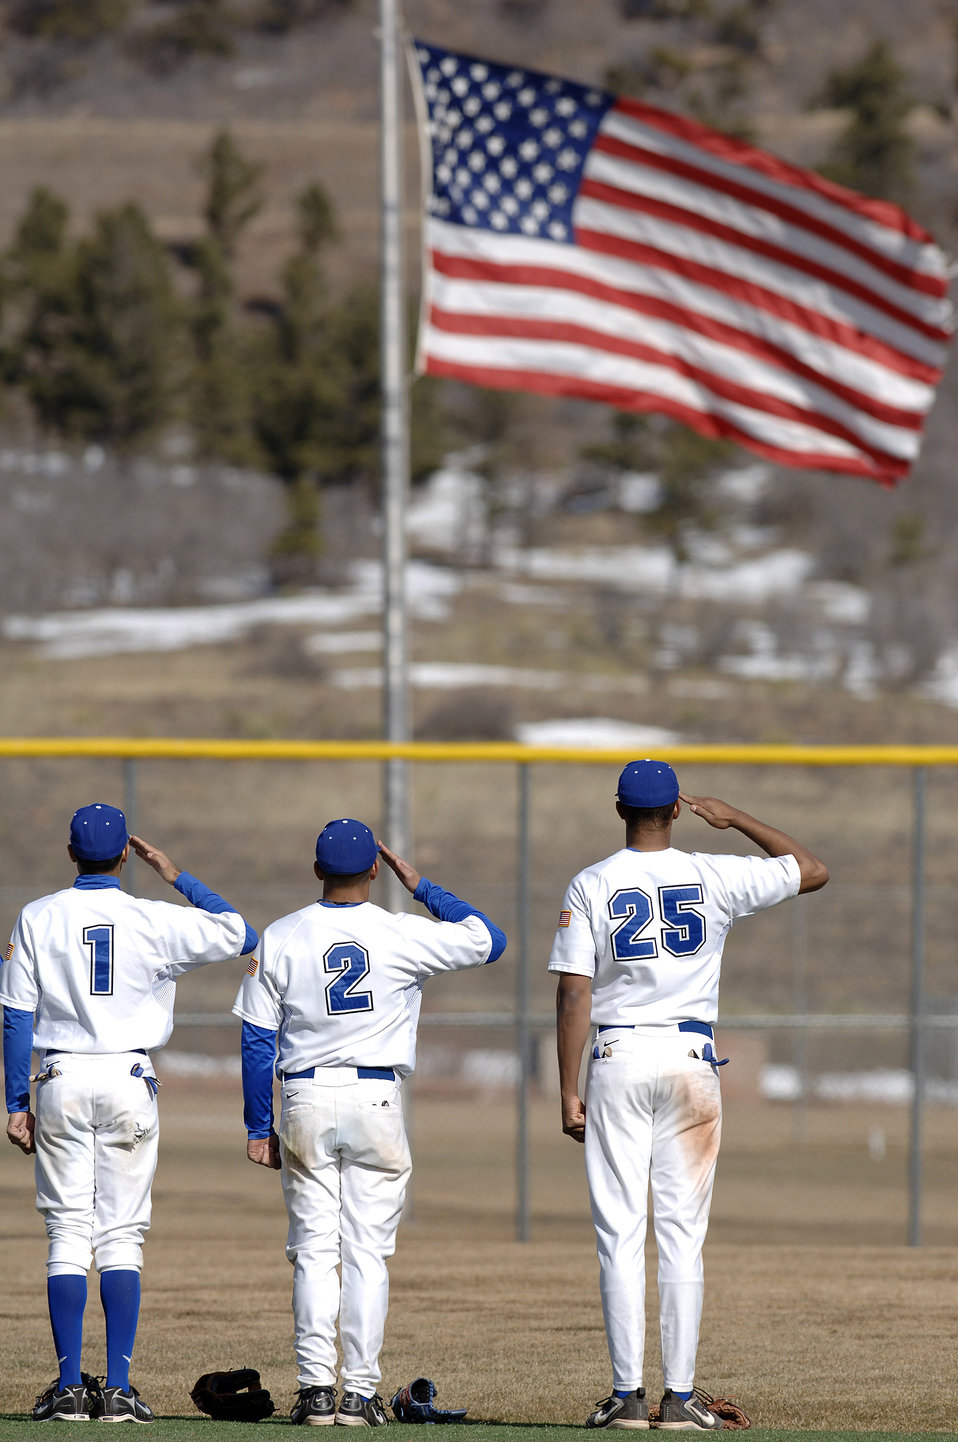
Falcons fall to Northern Colorado

Air Force Academy Men Falcons baseball team members freshman K.J. Randhawa, senior Geno Salazar and freshman Spencer Tate render a salute before the start of a three-game series against the Northern Colorado Bears Feb 10.